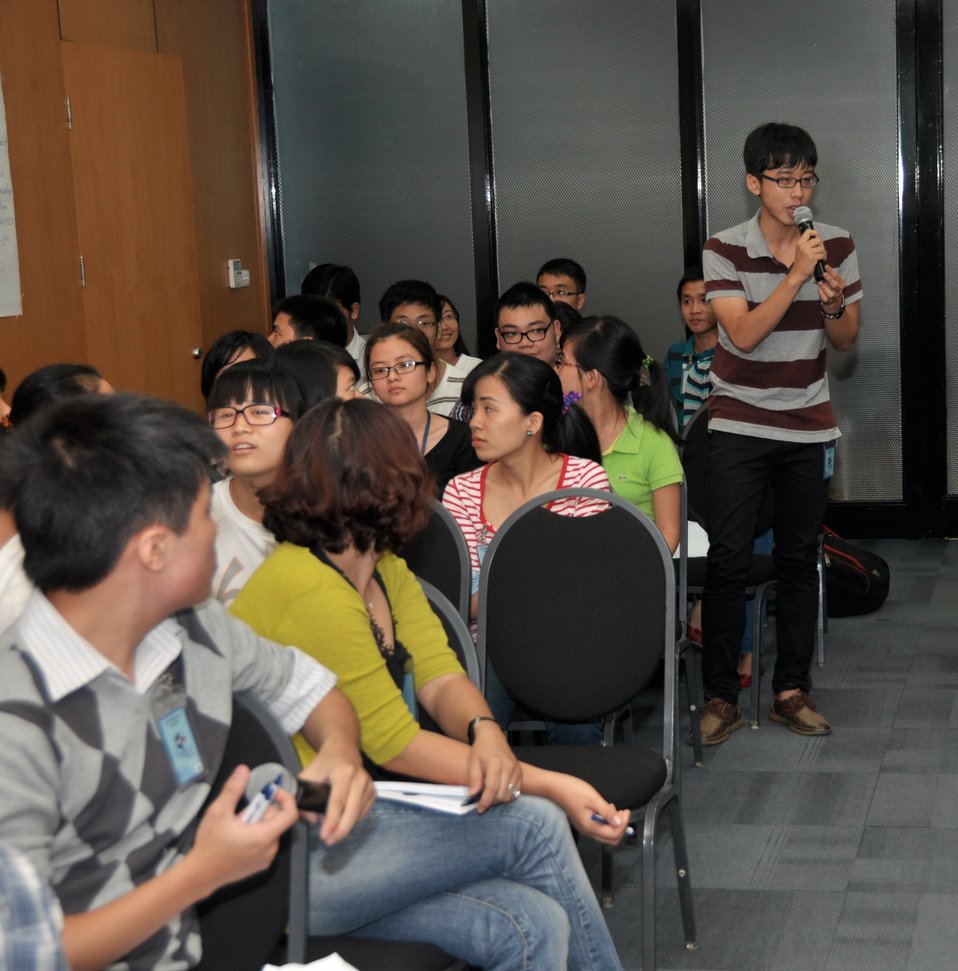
Vietnamese university students join the Business Plan Mashup exercise

Photo: @USAIDVietnam, November 16, 2012